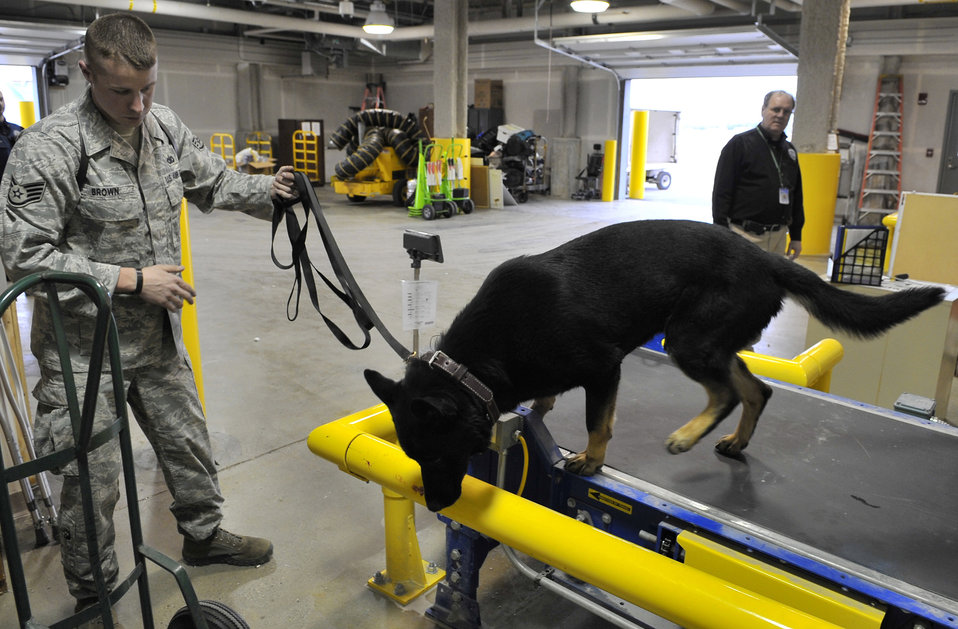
Working dog, EOD team partner to secure Alaska's interior

Staff Sgt. Robert Brown and military working dog Benny look for explosives during a sweep of the new wing at the Fairbanks International Airport in Fairbanks, Alaska, May 5. The Department of Homeland Security and Eielson Air Force Base, Alaska, joined together to clear the new wing of threats. The new wing is open to the community for use May 7. Sergeant Brown and Benny are a MWD team assigned to the 354th Security Forces Squadron, Eielson AFB.